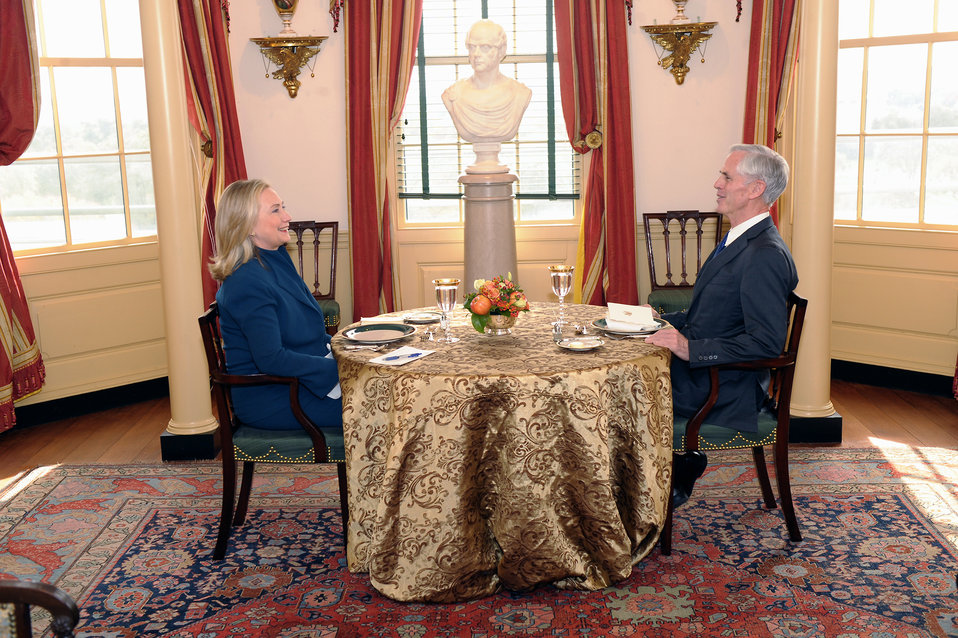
Secretary Clinton Meets With Secretary Bryson

U.S. Secretary of State Hillary Rodham Clinton meets with U.S. Secretary of Commerce John Bryson at the U.S. Department of State in Washington, D.C., on October 31, 2011.